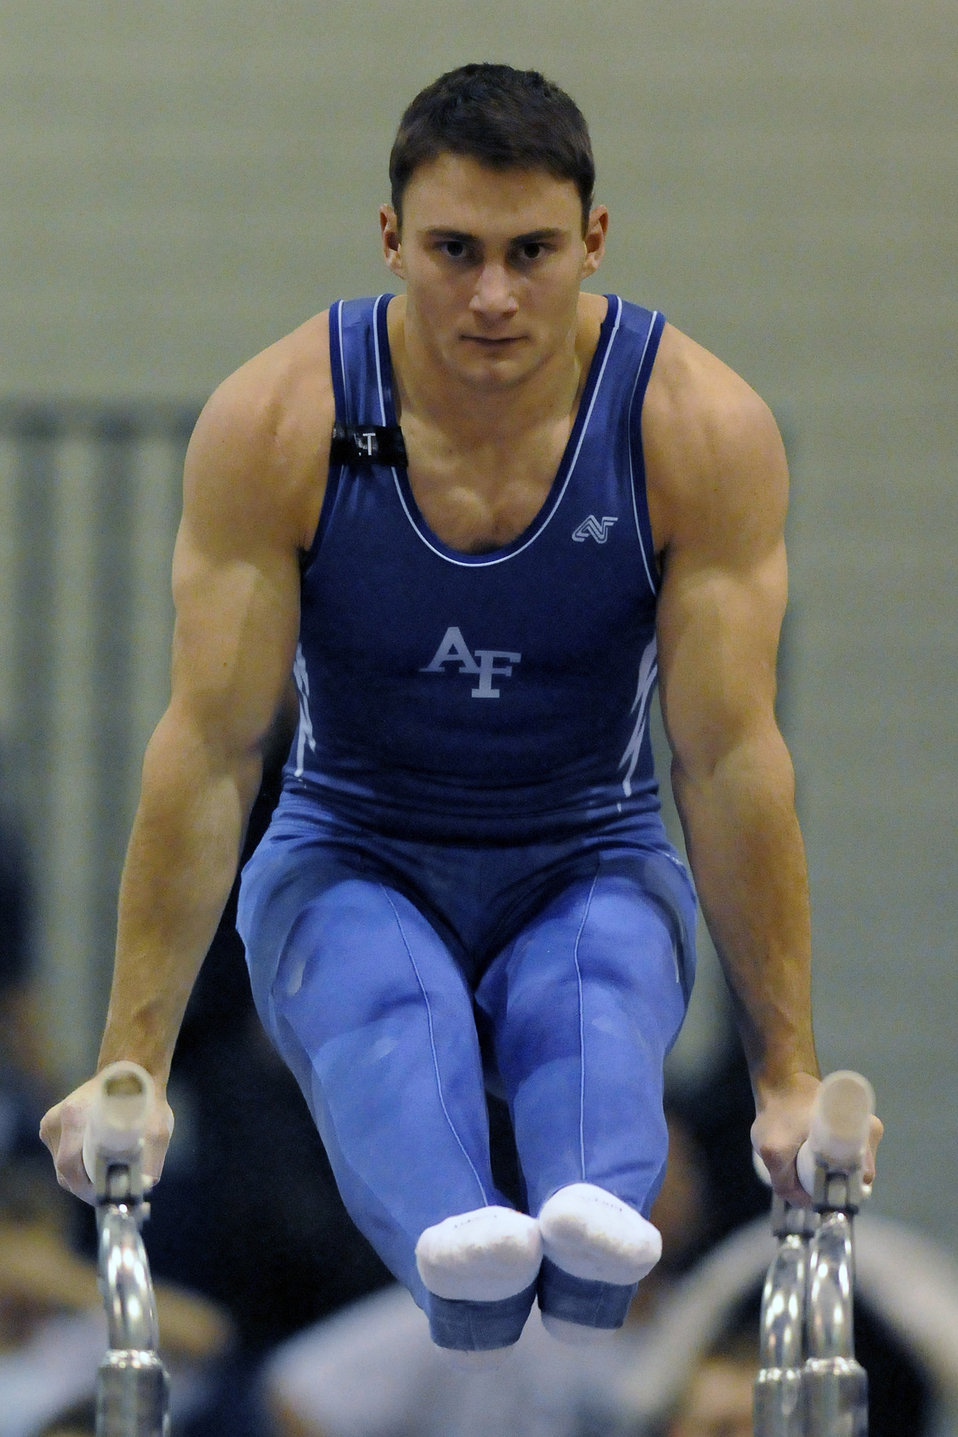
Airpower

U.S. Air Force Academy sophomore Matt Thorne perfoms a routine on the parallel bars during the annual Rocky Mountain Open Jan. 10 at the Academy in Colorado. The Falcons men's gymnastics team accounted for seven top-10 finishes as they placed third overall in the meet in front of a capacity crowd.